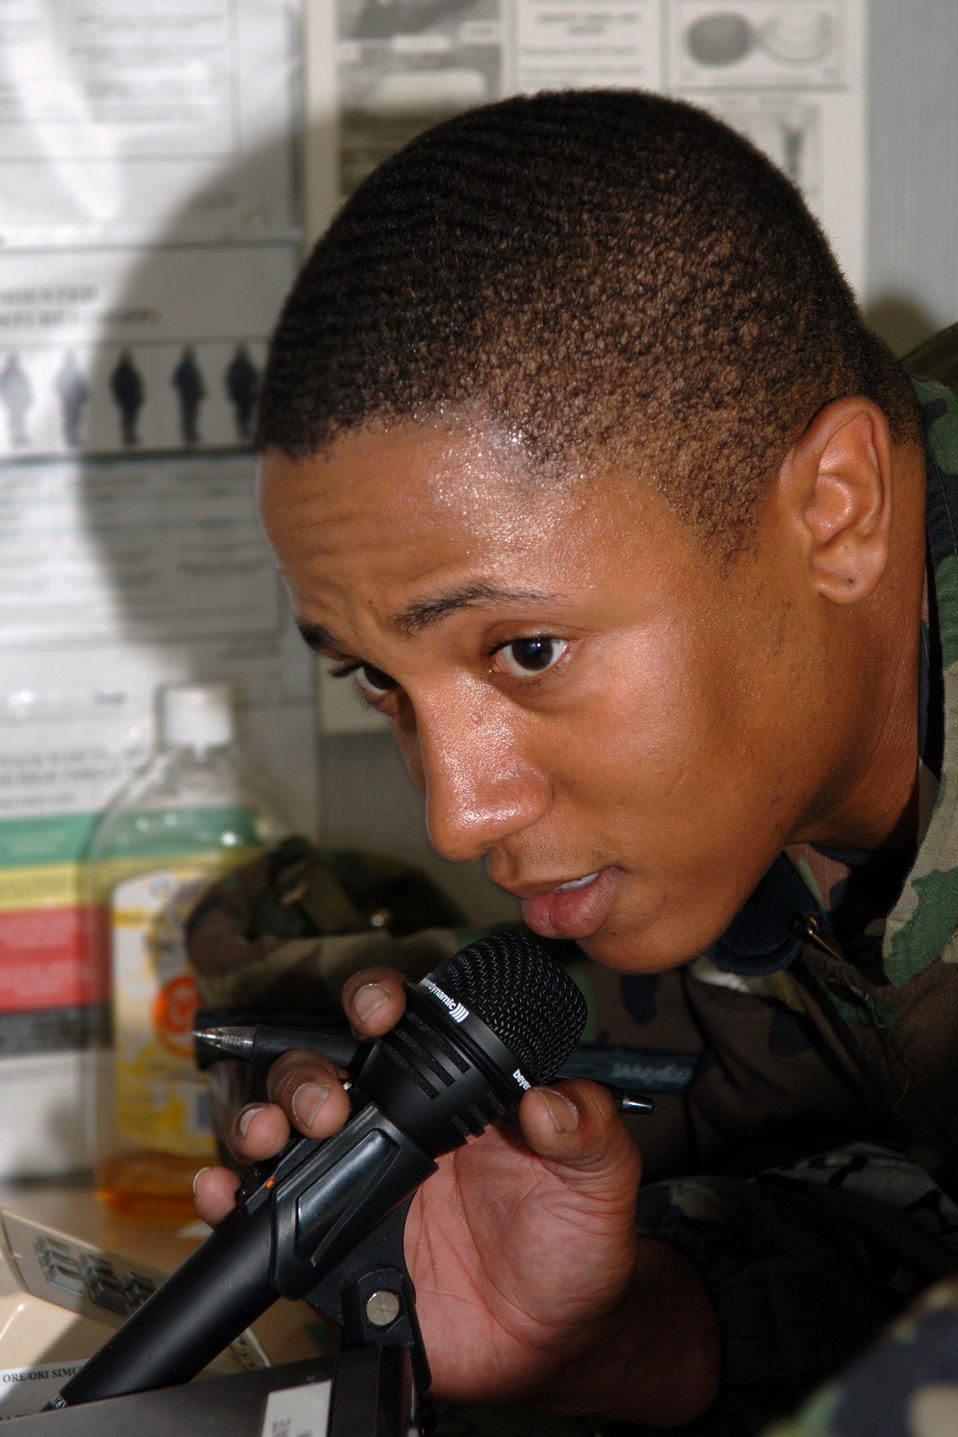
Fired up

Capt. Christopher Owens announces the base status during an operational readiness inspection scenario at Ellsworth Air Force Base, S.D., on July 19. Captain Owens is with the 28th Communications Squadron.